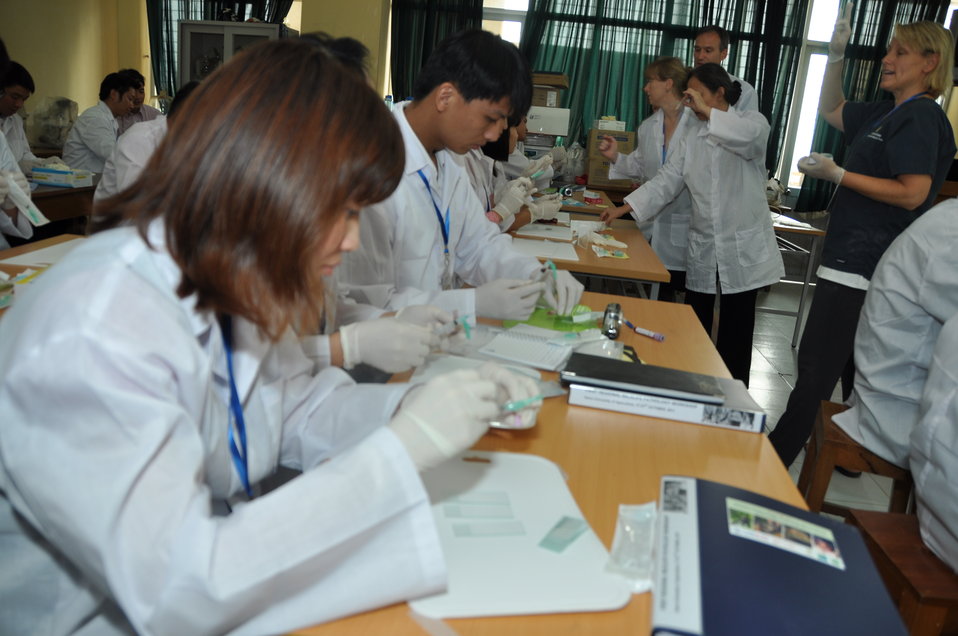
USAID EPT Smithsonian Pathology Training to Detect Emerging Infectious Diseases Wildlife and Other Animals in Vietnam Workshop